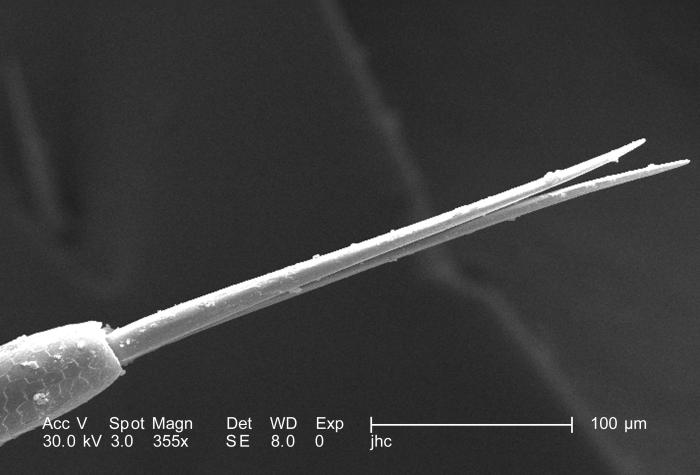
At an even higher magnification of 355X, which is twice as high as PHIL 9944 and four time greater than PHIL 9943, this scanning electron micrograph (SEM) again depicted some of the morphologic exoskeletal features located at the distal end of an adult 'figeater' beetle's, Cotinis mutabilis leg. Depicted here was a closer view of the tarsal empodium, which is a spike or bristle that arises from the last tarsal segment from what is known as the 'unguitrator plate'. This chitinous structure enhances the claw-like appendicular configuration, which is better visualized in PHIL 9943 and 9944, and affords the beetle a more secure grasp of objects within its environmental domain, such as foliage or food. See PHIL 9943, 9944, 9947, 9948, and 9949 for additional views of these exoskeletal features.